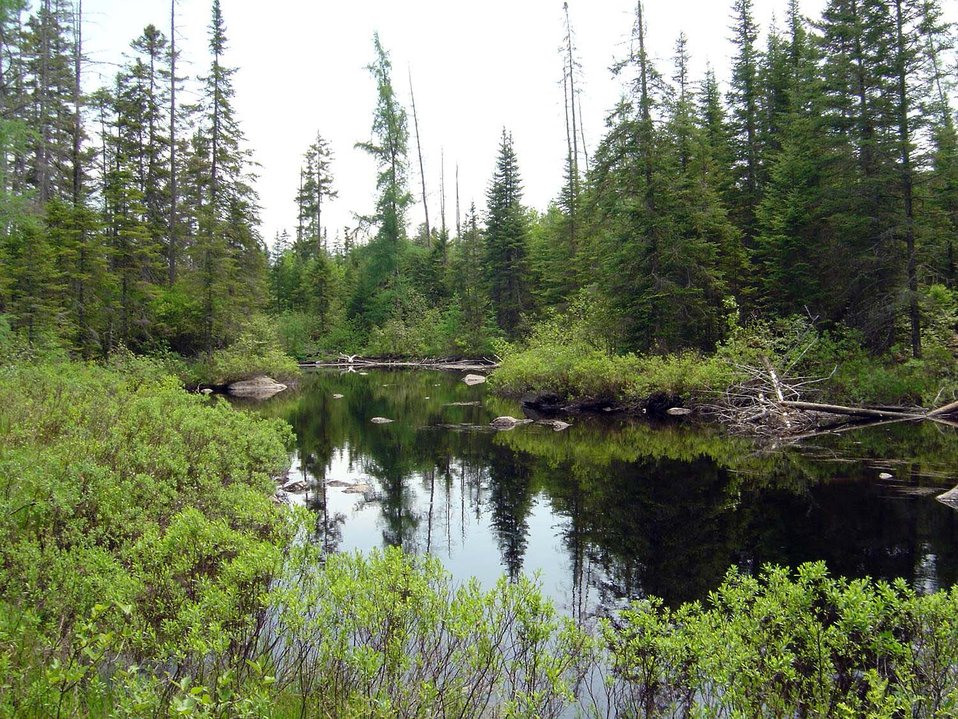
Yellow Branch

Nulhegan Basin Division, Silvio O. Conte National Wildlife Refuge.